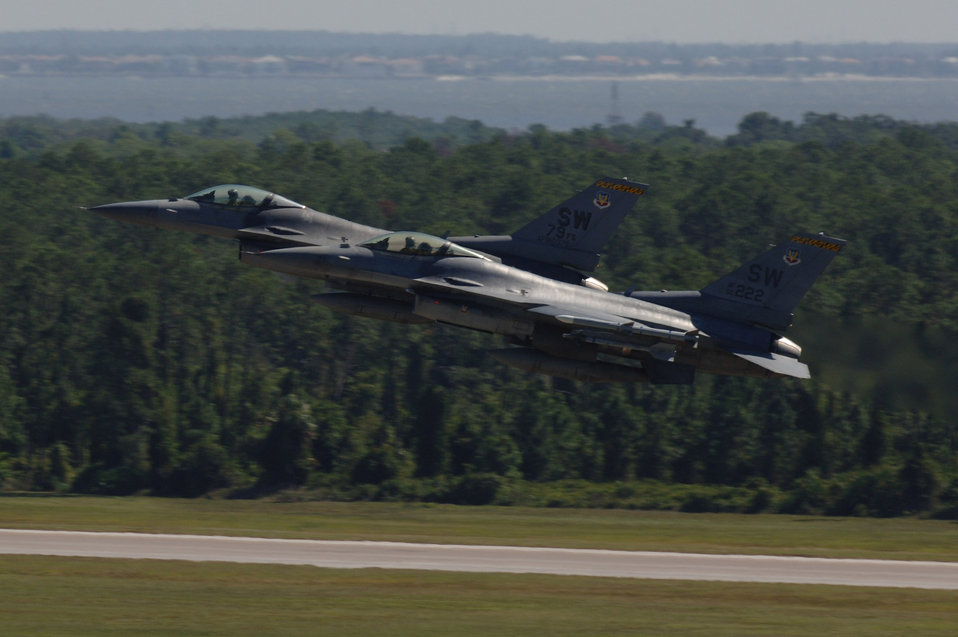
Crews sharpen skills at Atlantic Strike

Two F-16 Fighting Falcons take off from MacDill Air Force Base, Fla., for an Atlantic Strike exercise mission Oct. 24. The fighters, from the 20th Fighter Wing at Shaw AFB, S.C., were at MacDill for the U.S. Central Command bi-annual Atlantic Strike training event. Through realistic close-air support training, Atlantic Strike is designed to better prepare aircrews and Air Force joint tactical air controllers for deployments.